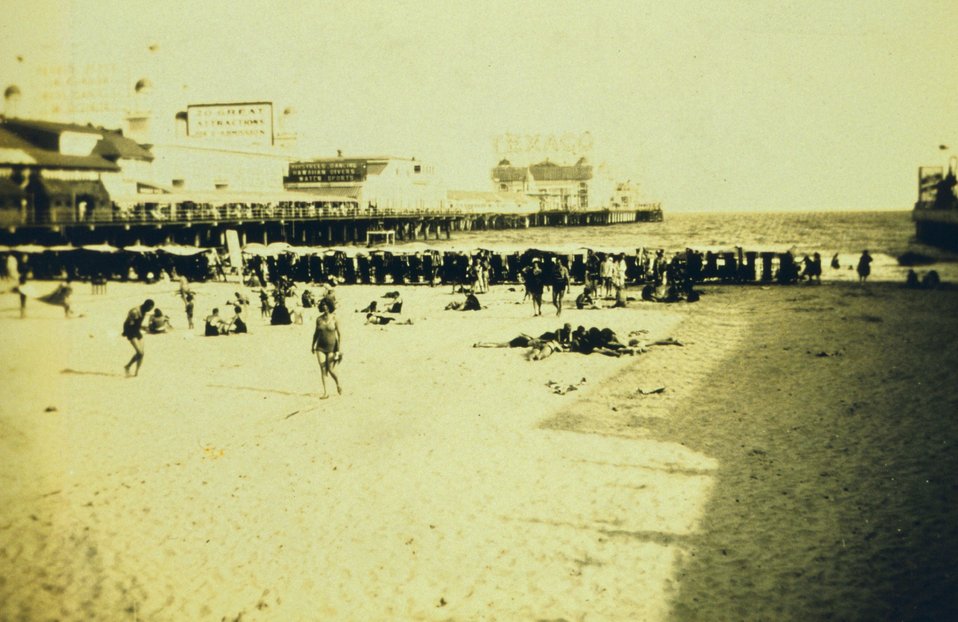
The steel pier at Atlantic City, 'Show Place of the Nation.'